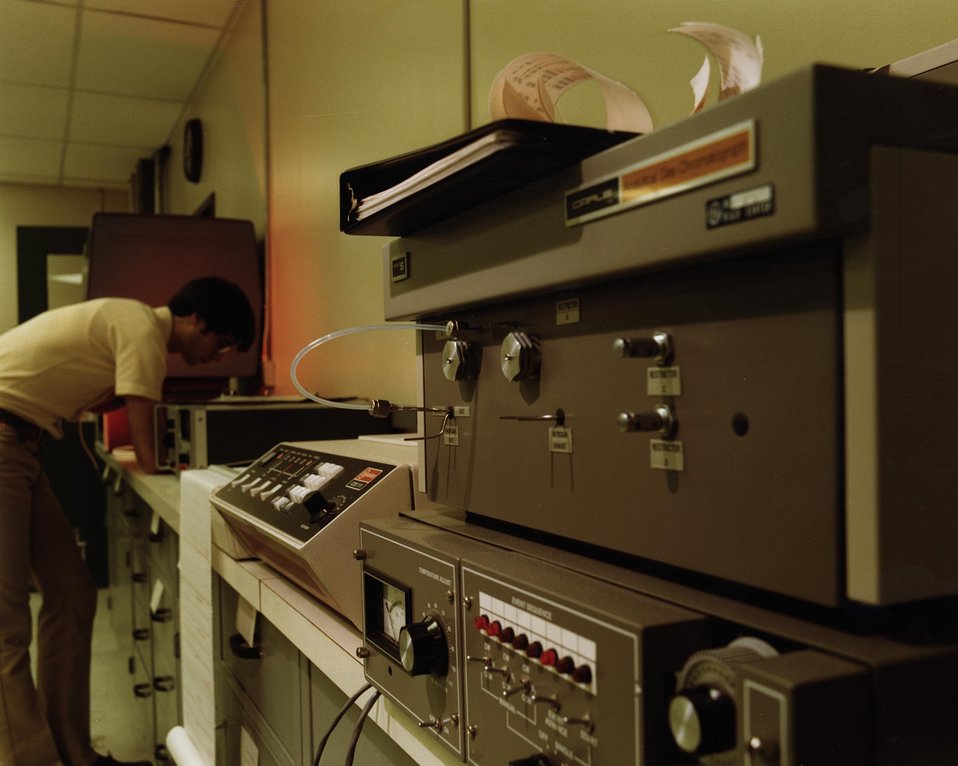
GAS CHRONOGRAPH TEST ANALYSIS EQUIPMENT AND ADVANCED ELECTRODE TESTING FACILITY AT GENERAL ELECTRIC.

A NEWER METHOD OF COMMERCIALLY GENERATING ELECTRICITY IS BEING DEVELOPED BY GENERAL ELECTRIC. FUEL CELLS, BATTERY-LIKE GENERATORS, PRODUCE ELECTRICITY BY AN ELECTROCHEMICAL RE- ACTION. UNLIKE THE BATTERY, THE FUEL CELL HAS A CONSTANT SOURCE OF FUEL. IN THIS PROGRAM, G.E. IS PLANNING TO USE GASIFIED COAL TO POWER THE CELLS. THIS HYDROGEN-RICH FUEL IS FED INTO ONE SIDE OF THE CELL WHILE OXYGEN IS FED INTO THE OTHER. THIS CREATES A NEGATIVE CHARGE AT THE HYDROGEN (ANODE) SIDE AND A POSITIVE CHARGE AT THE OXYGEN (CATHODE) SIDE. THE ATTRACTION OF THESE CHARGES CAUSES THE ELECTRONS TO FLOW THROUGH THE MOLTEN CARBONATE ELECTROLYTE. THIS MOVEMENT OF THE ELECTRONS CREATES THE ELECTRICITY. BECAUSE THE MOLTEN CARBONATE FUEL CELL HAS A HIGH OPERATING TEMPERATURE, IT CREATES EXCESS HEAT WHICH CAN BE USED TO POWER OTHER ELECTRIC GENERATORS.